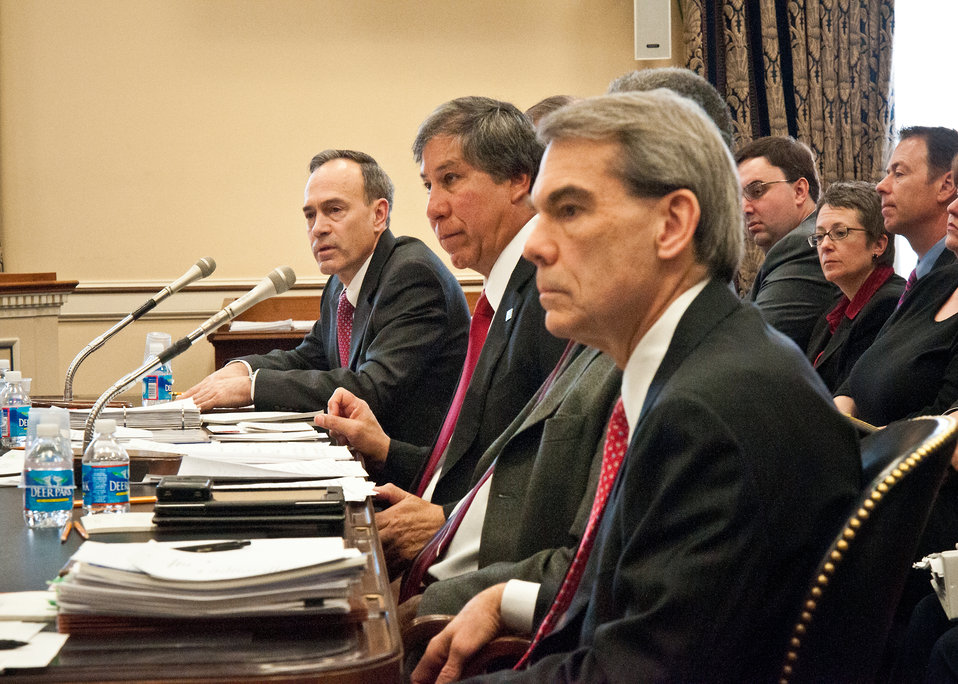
Alan Christian (left), Acting Administrator, Grain Inspection Packers Administration answers questions posed by members of the House Agriculture Appropriations Subcommittee while testifying on Capitol Hill with Ed Avalos (right), Under Secretary, Marketing and Regulatory Programs and representatives of the Marketing and Regulatory Program agencies on their fiscal year 2013 budget requests in Washington, D.C., Tuesday, March 6, 2012.